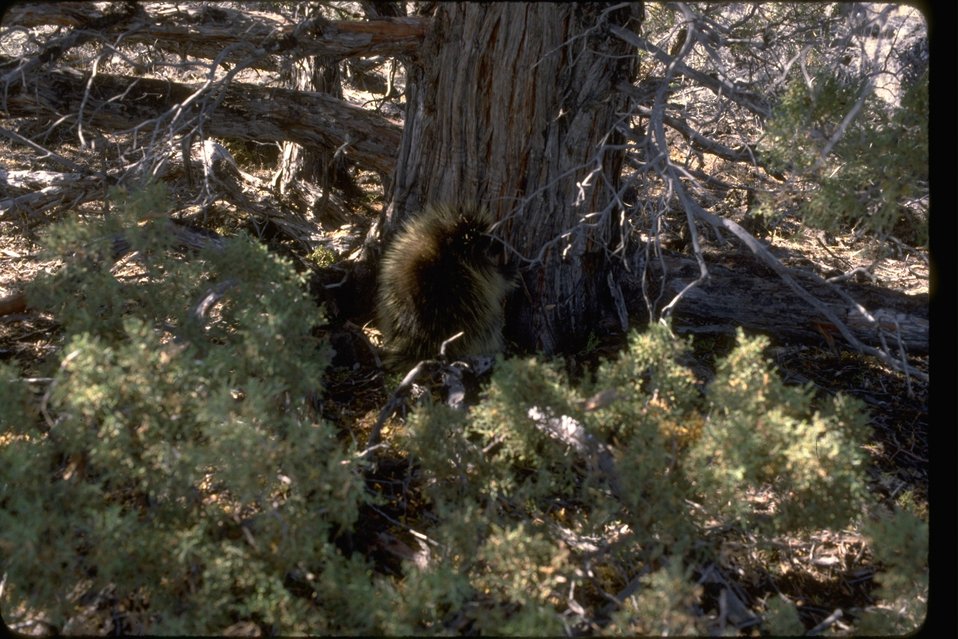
Porcupine in the Guano Creek Wilderness Study Area. OR 1-132